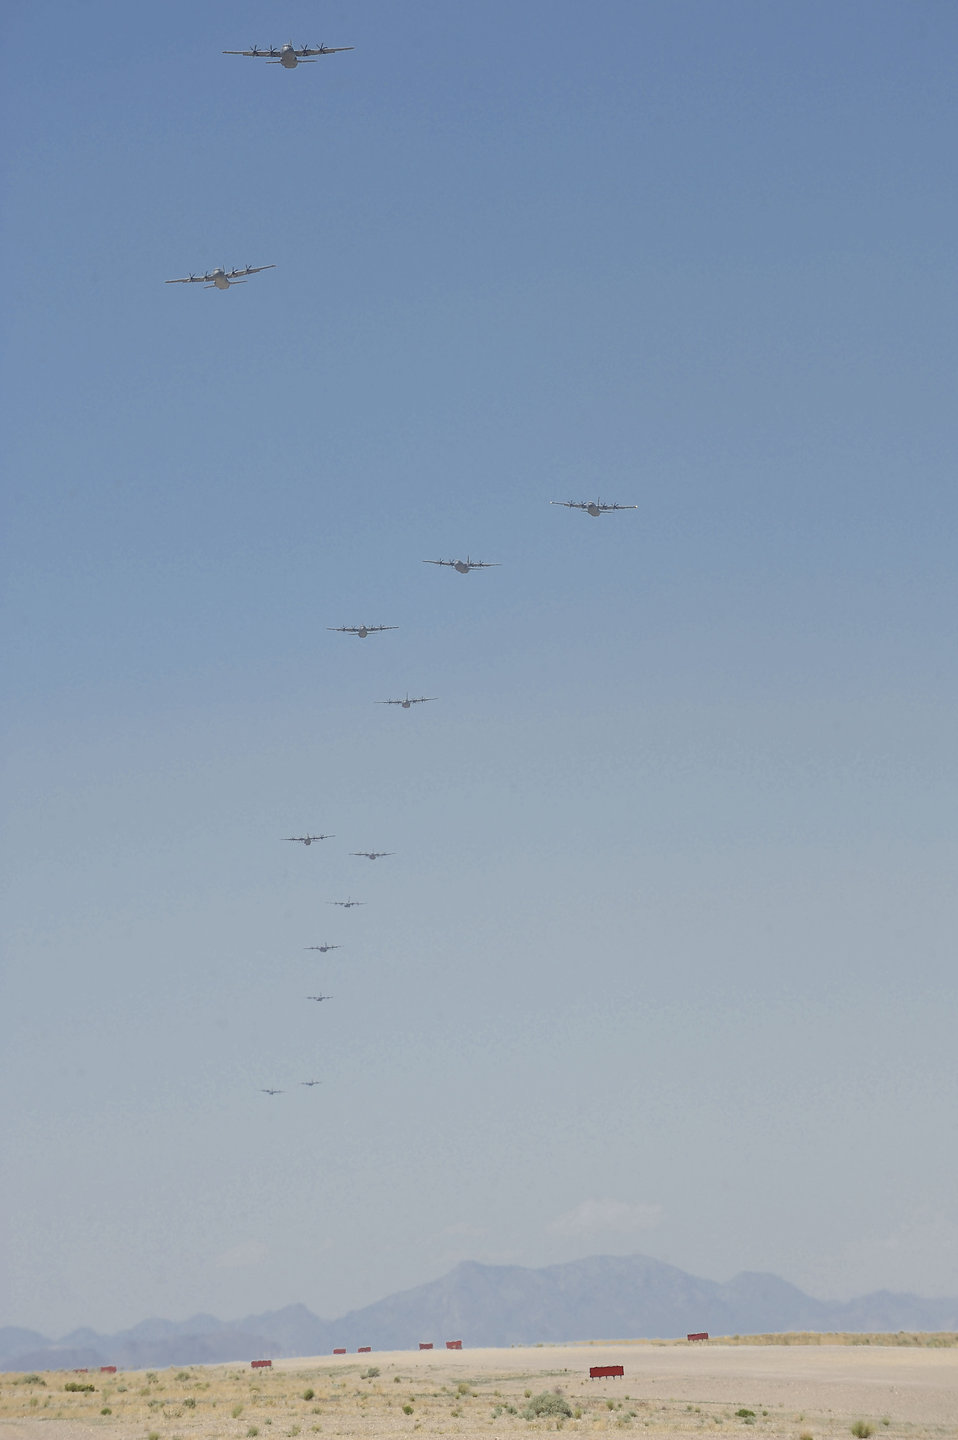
Airmen, Soldiers complete MAFEX

C-130 Hercules aircraft fly over the Nevada Test and Training Range during Mobility Forces Exercise 12A in Tonopah, Nev., May 23, 2012. The exercise is part of the six-month weapons instructor course held at the U.S. Air Force Weapons School at Nellis Air Force Base, Nev.